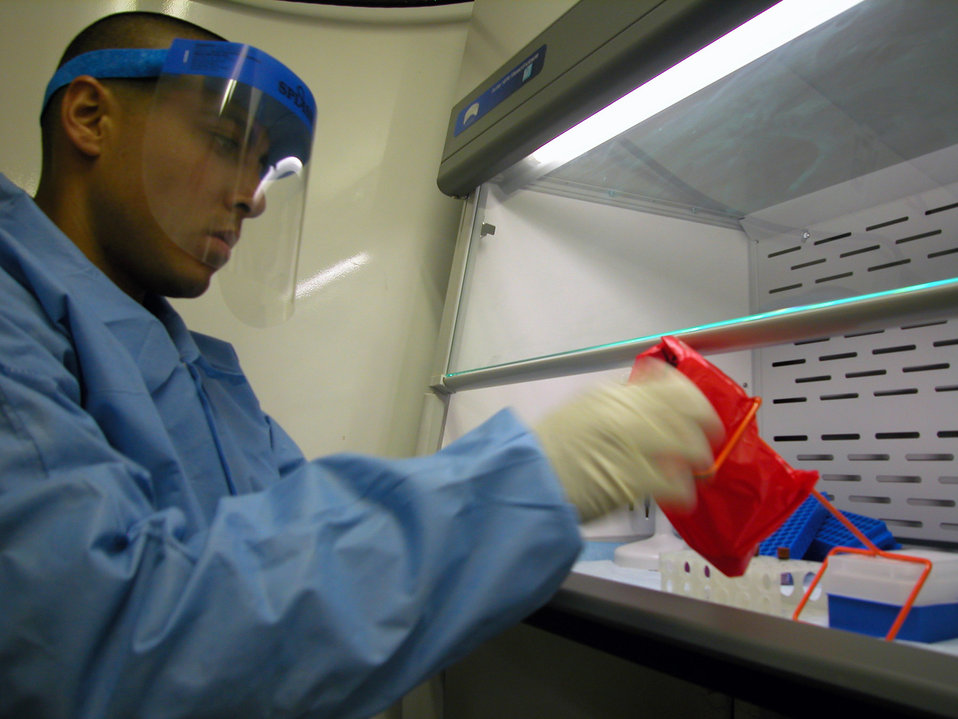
Biological team protects Balad Airmen from bioterrorism

Staff Sgt. Raul Gutierrez sets up a test in the biological augmentation team lab May 11 at Balad Air Base, Iraq. Sergeant Gutierrez is deployed from the Air Force Institute of Operational Health, part of the 311th Human Systems Wing at Brooks-City Base in San Antonio. Sergeant Gutierrez is a a lab technician with the 332nd Expeditionary Medical Group's biological augmentation team.